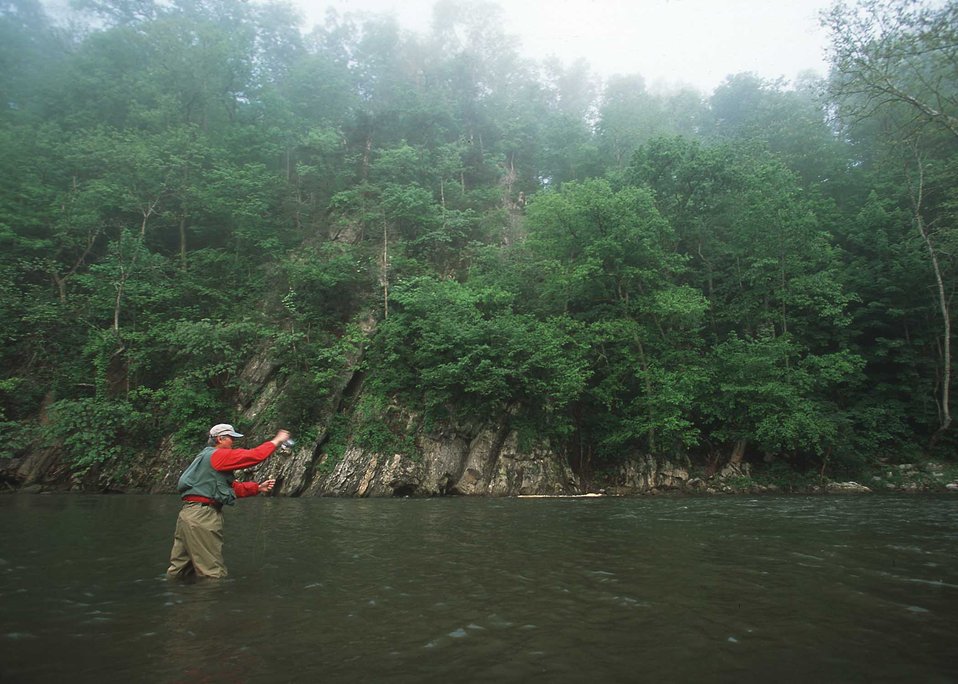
Fly fisherman on the South Fork of the Holston River. The river is one of the 10 Heritage rivers in the US. NRCS worked with local farmers and other agencies in providing buffers, fencing for livestock, roational grazing, tree planting and recreational opportunities while at the same time improving water quality and wildlife habitat.